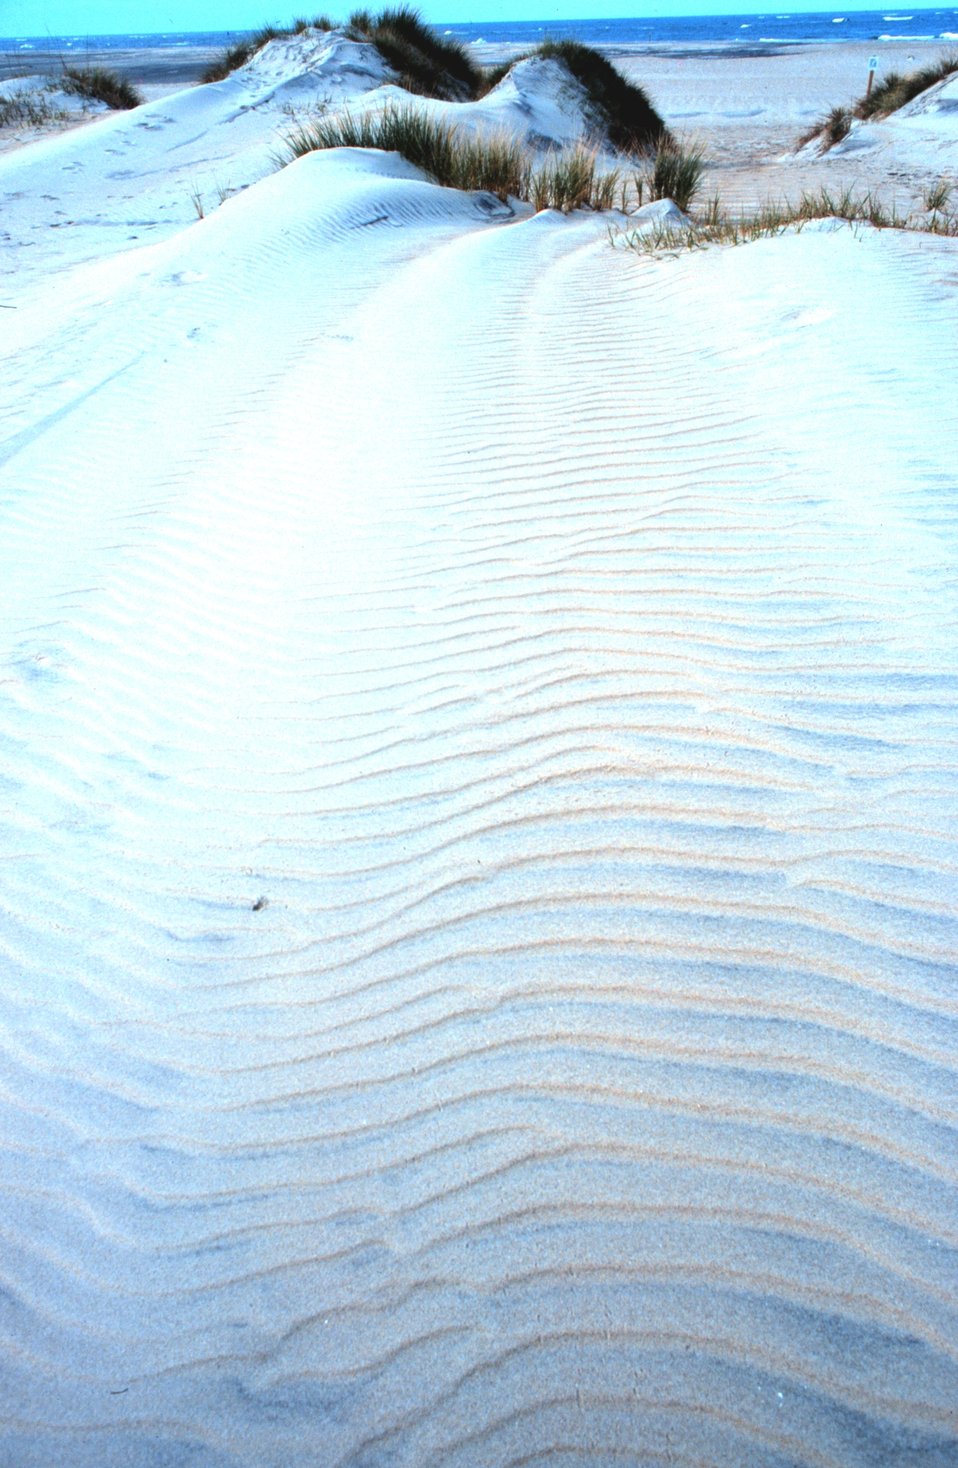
Wind-swept dunes near the abandoned Coast Guard Station